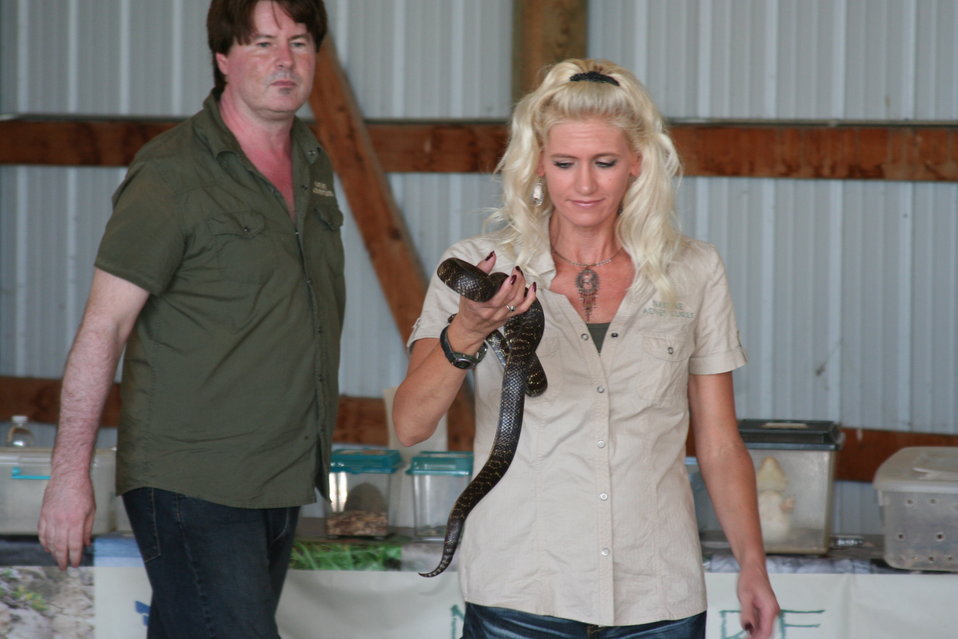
2011 Huron Prairie Fest